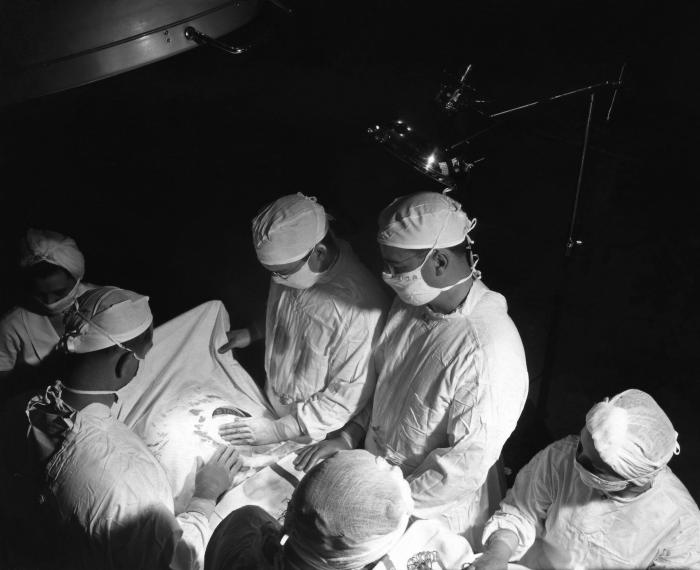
This 1950s historical photograph was provided by the Center for Disease Control's (CDC), National Institute for Occupational Safety and Health (NIOSH). It depicted the inside of an operating room suite during a surgical procedure. Following sterile protocol, the surgeons and nurses were all appropriately dressed in sterile garments consisting of head coverings, gloves, and surgical robes, which are all still worn to this day, though constructed of more complex materials that implement synthetics such as hypoallergenic polyesters.